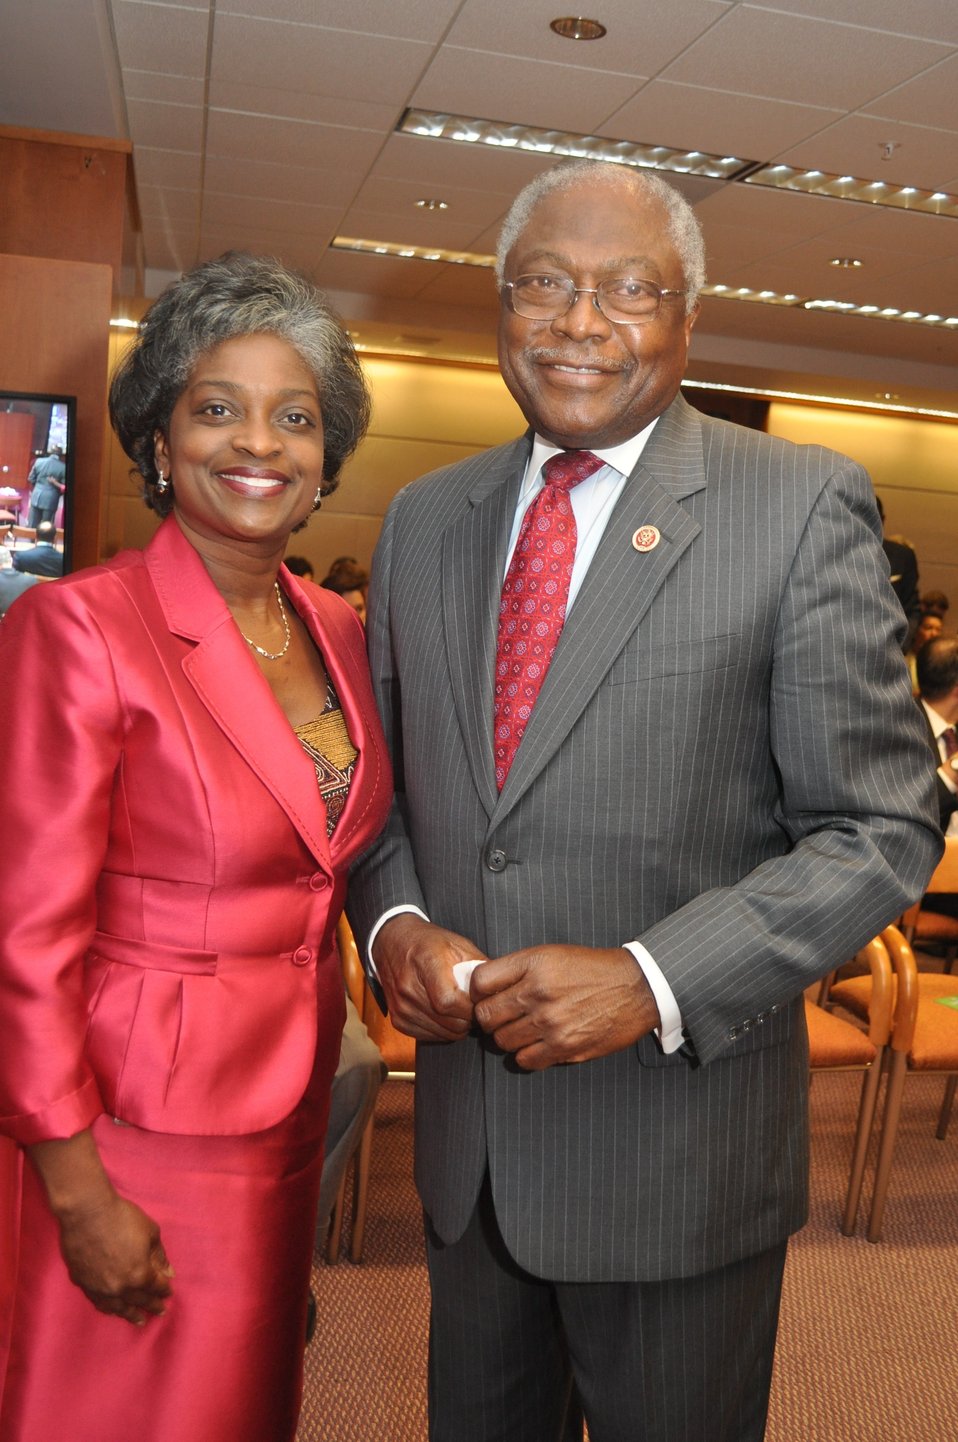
FCC Chair Clyburn convenes FCC open meeting as first woman Chair 6-27-2013

Acting FCC Chair Mignon Clyburn & Congressman James Clyburn.